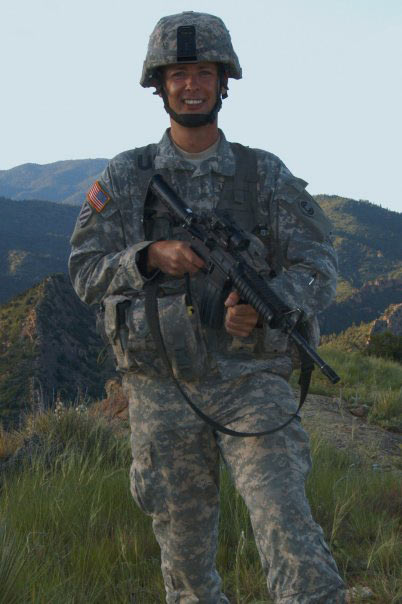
Steve Segin-Mountain-Prairie-Region

Army SGM Steve Segin works in R6 External Affairs.